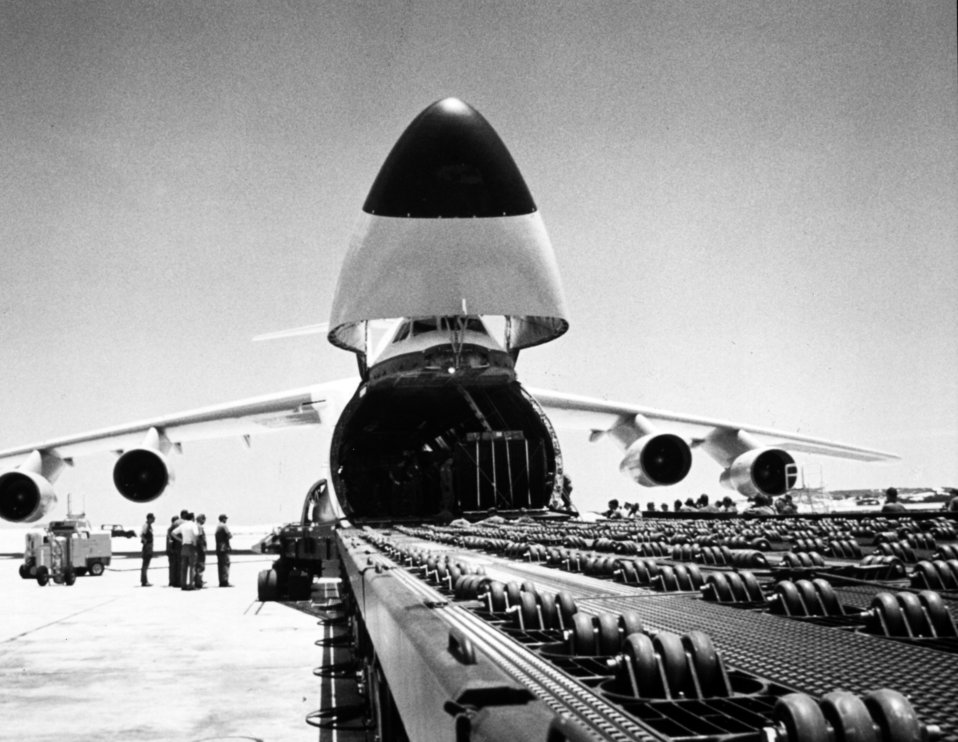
C-5 Galaxy

1970's -- Front view of a C-5 Galaxy, visor raised, ready to receive cargo at Cam Rahn Bay Air Base, South Vietnam, September 1970.